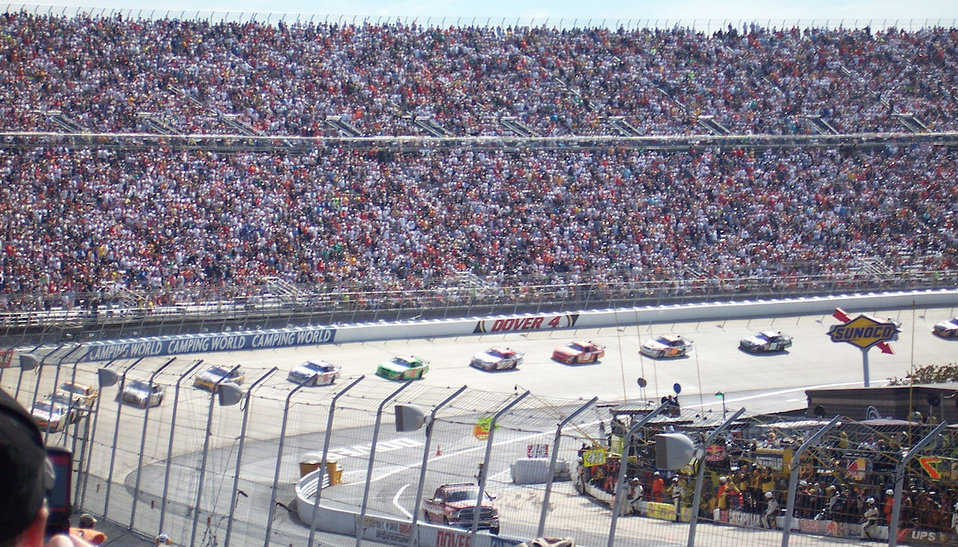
Nascar race

Picture of nascar race.